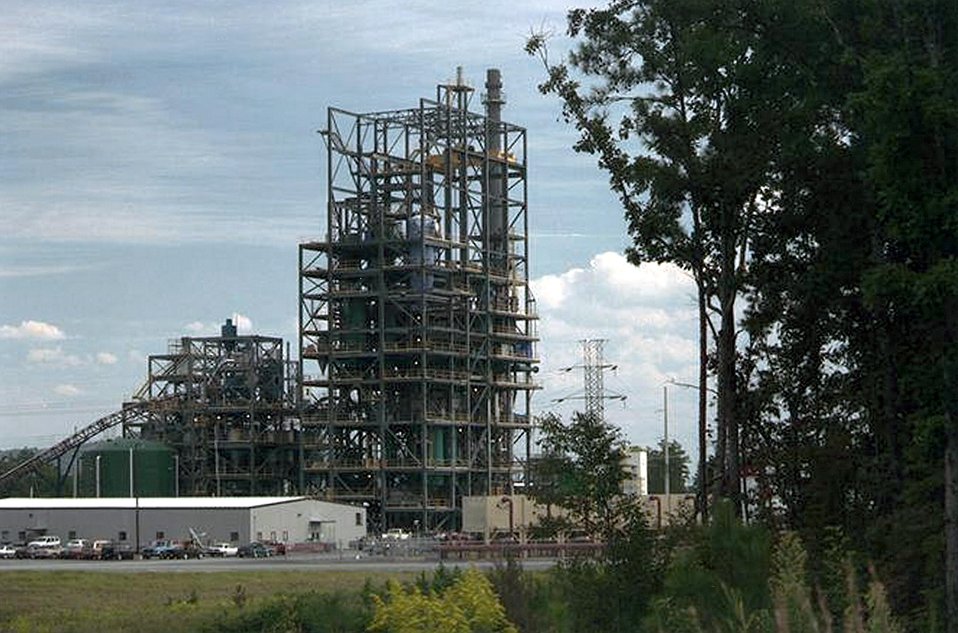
TYPICAL COAL COMBUSTER POWER PLANT WHERE COAL IS BURNED FOR STEAM AND ELECTRIC POWER.